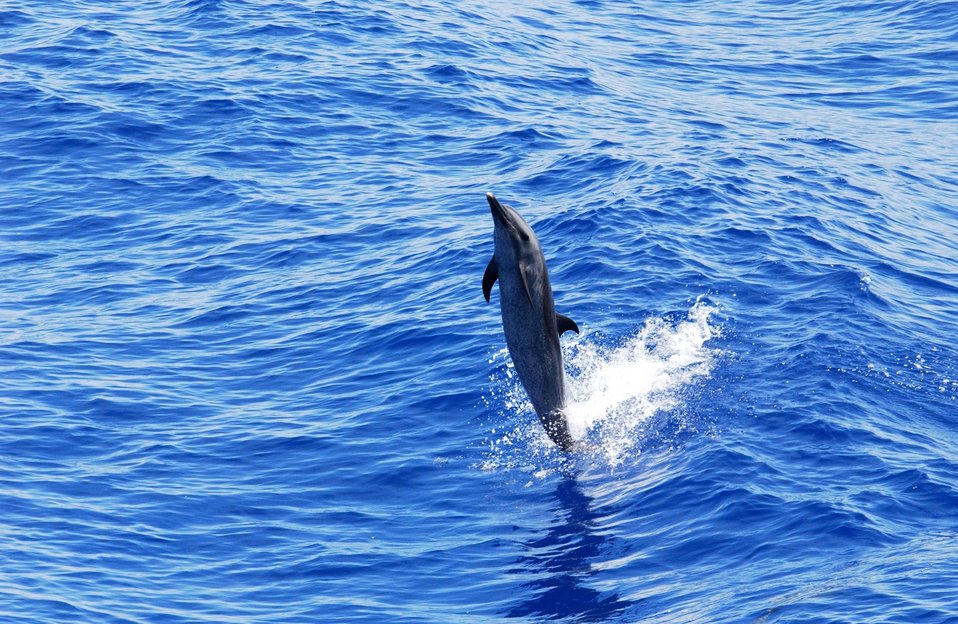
Pantropical spotted dolphin